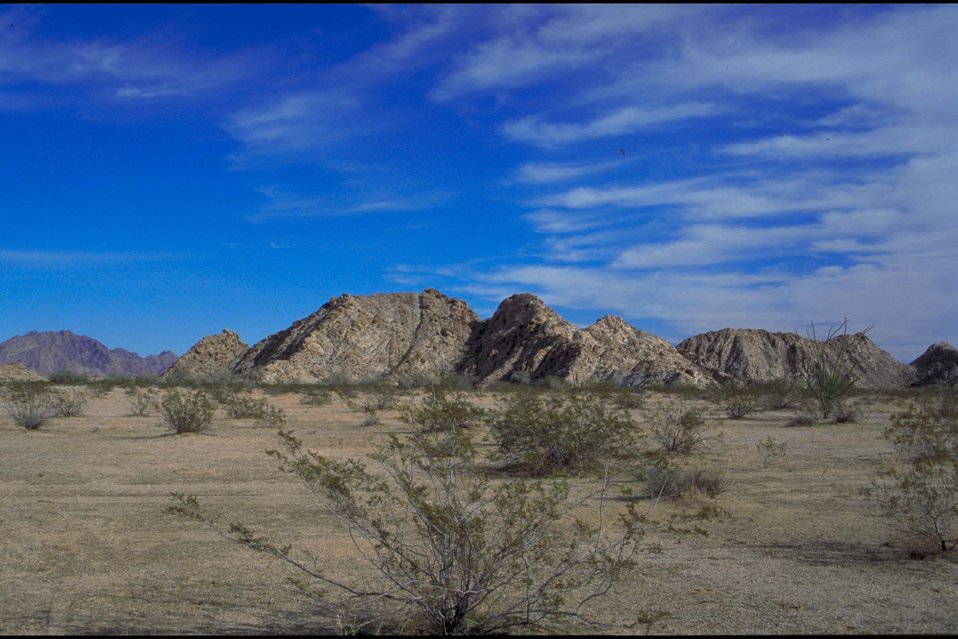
Beautiful lanscape in the Arizona desert